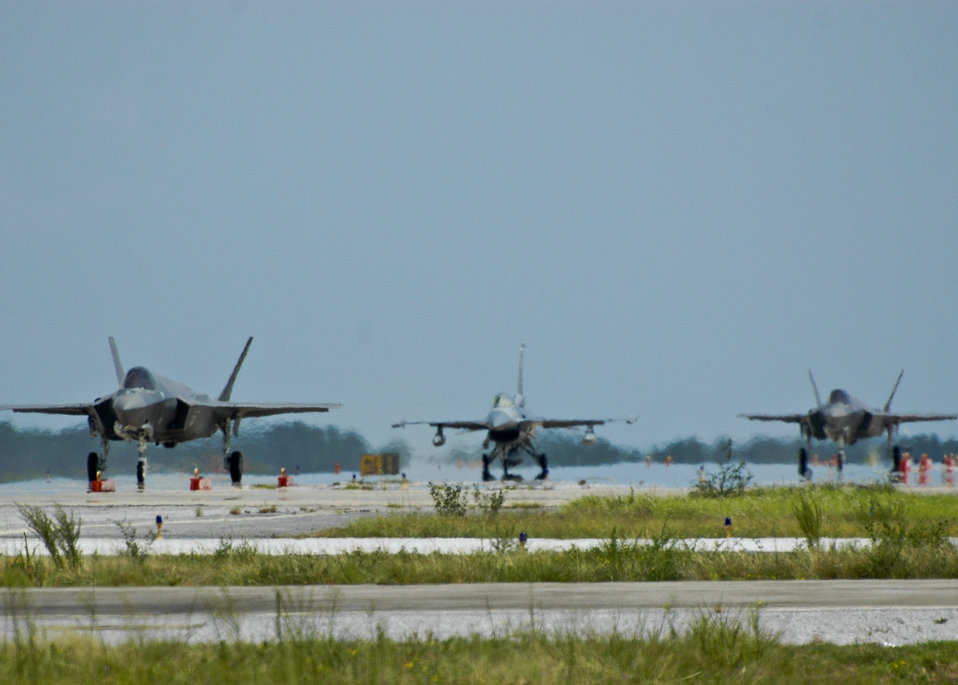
Eglin F-35 number increases to four

Two F-35A Lightning II joint strike fighters and an F-16 Fighting Falcon taxi on the runway after arriving at Eglin Air Force Base, Fla., Aug. 31, 2011. The F-35s will be used for JSF maintenance training until all certifications are complete.